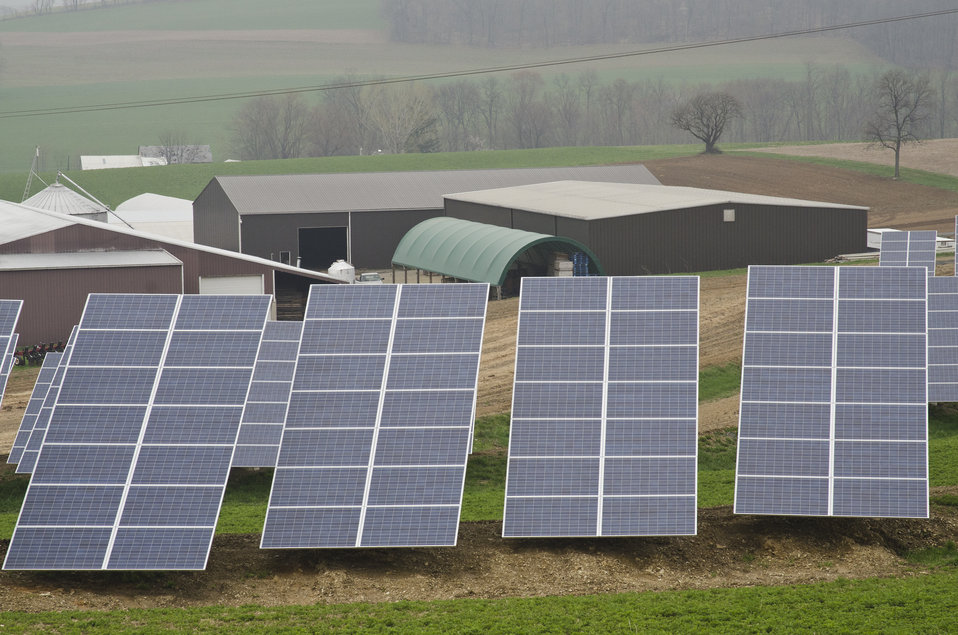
Heidel Hollow Farms has been a family owned farm since 1852 and is currently an 18,000-acre operation in Germansville, PA on April 20, 2011. Led by President David Fink they mainly produce and compact hay for export; additionally they grow produce on 300 acres for local sale within a 40-mile radius. With the financial help of the U.S. Department of Agriculture (USDA) an 896 panel solar array was recently installed on undeveloped diversion ditches. Rated at 200 kilowatts, they project 240 megawatts of electricity to be produced each year, providing up to 70% of the farms electrical needs. Additionally, USDA financial assistance made it possible to replace the hay compactor’s diesel engines with clean low-maintenance, low operating cost electric motors to power the compactor's hydraulic system. The compactor increases the density of baled hay by two and half times for more efficient shipping to overseas customers.